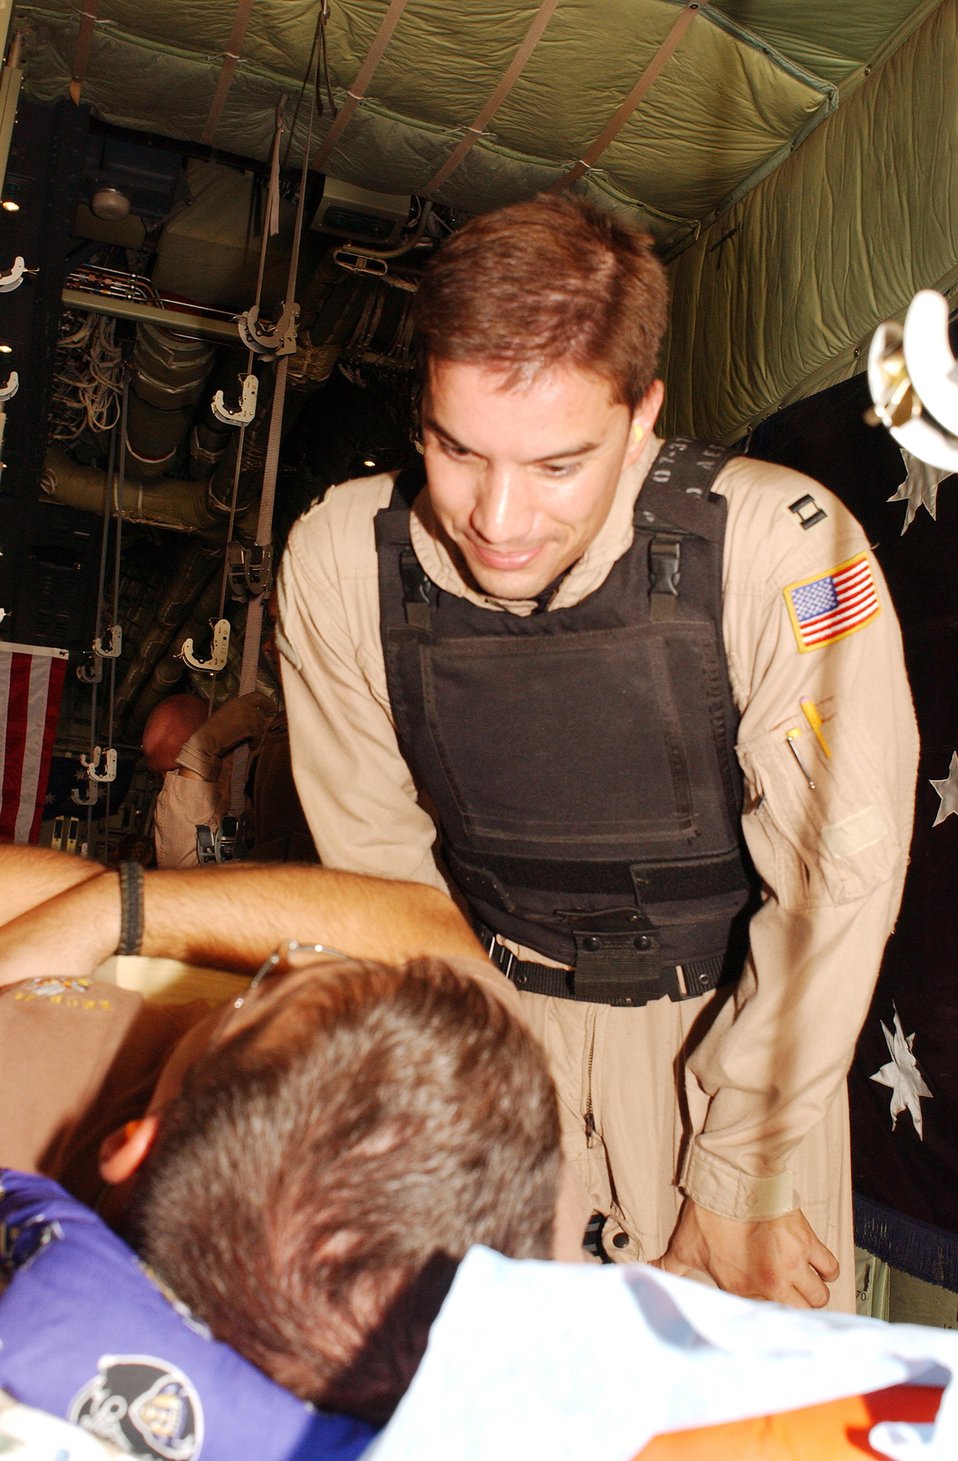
Aeromedical evacuation process key to saving lives in Iraq

BALAD AIR BASE, Iraq -- Capt. Chris Stratford comforts Army Staff Sgt. Jeremy Simms before departing on a medical evacuation mission aboard a C-141 Starlifter to Ramstein Air Base, Germany. Captain Stratford is an in-flight nurse from the 375th Aeromedical Evacuation Squadron at Scott Air Force Base, Ill.